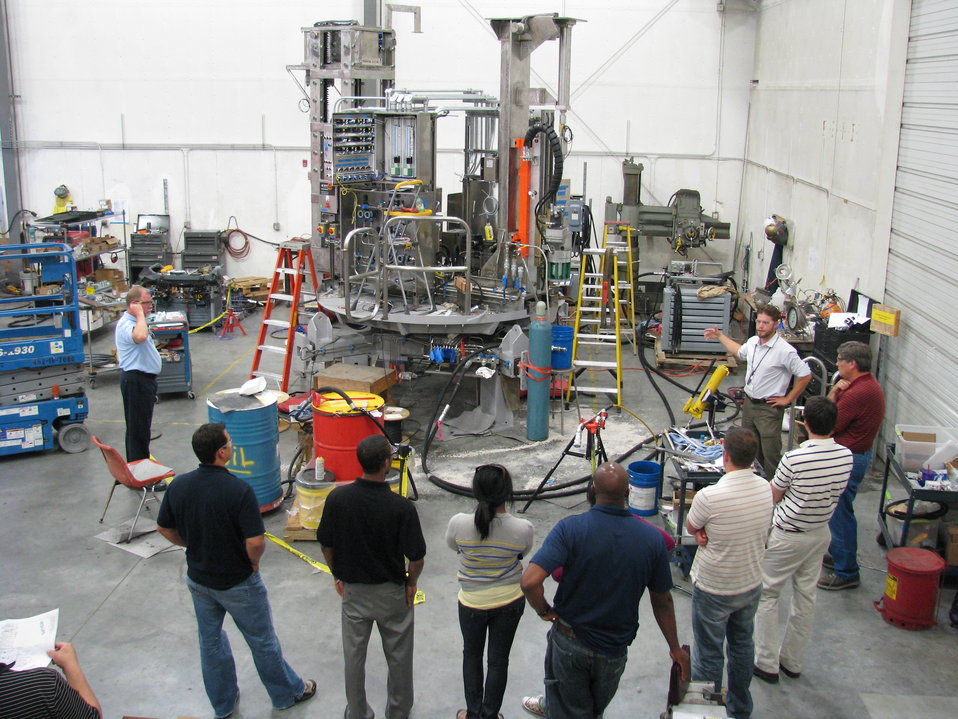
New ORP facilities

Work is wrapping up on a new, Recovery Act-funded core sampling system that will replace decades-old equipment currently being used in tank farms.